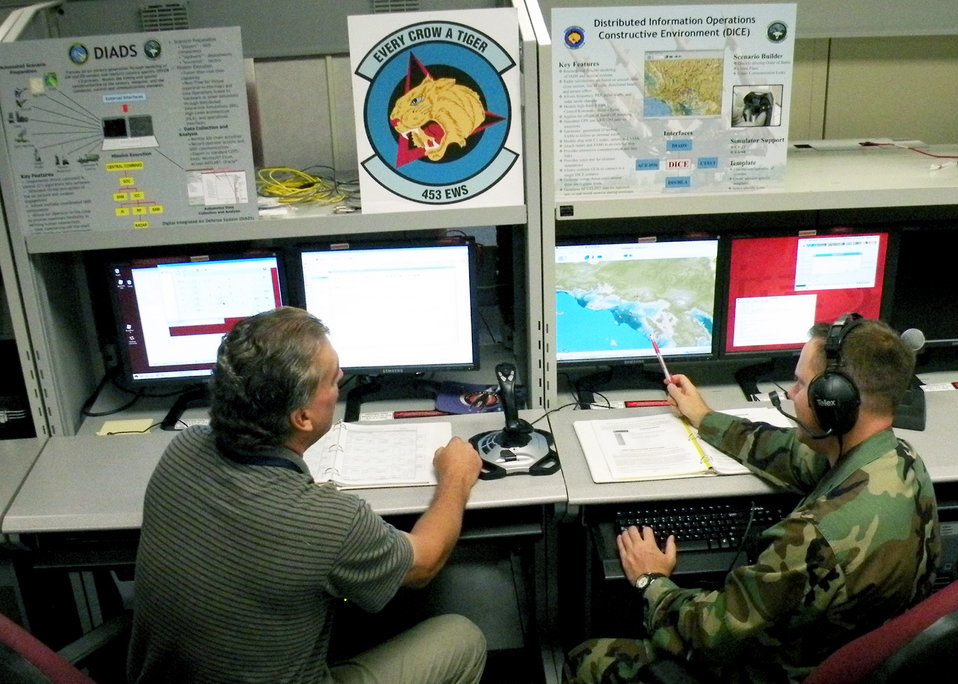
Squadron provides 'electronic armor'

Members of the 453rd Electronic Warfare Squadron provide assistance during an exercise. The squadron's mission is providing electronic warfare analysis and support down range to joint and coalition warfighters. The squadron, located at Lackland Air Force Base, Texas, is part of the 53rd Wing headquartered at Eglin AFB, Fla.